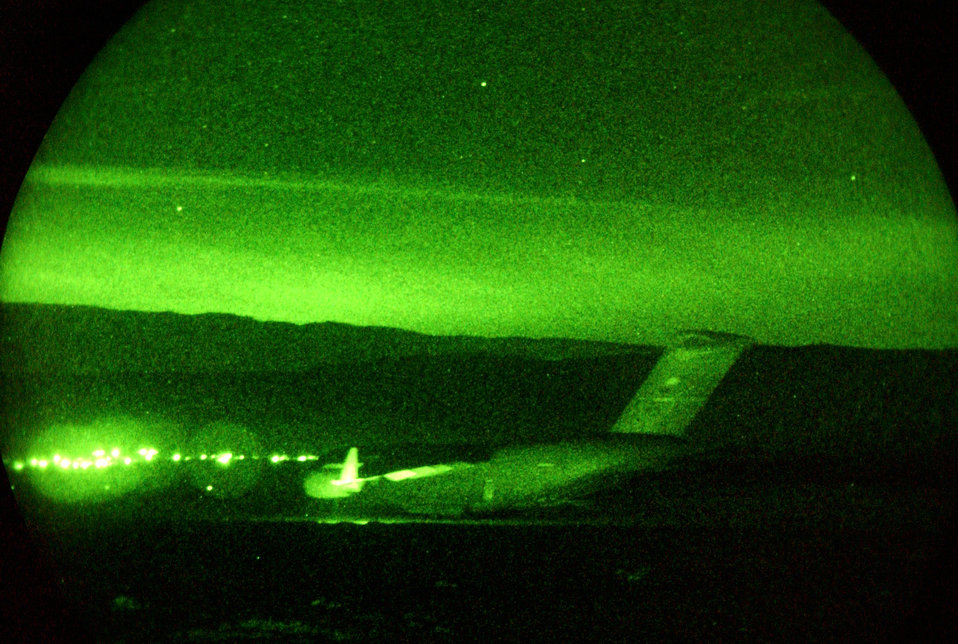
Air bridge

FILE PHOTO --An Air Mobility Command C-17 Globemaster III arrives at an airfield in northern Iraq, continuing to bring troops, supplies, and equipment into northern Iraq, April 1, 2003.